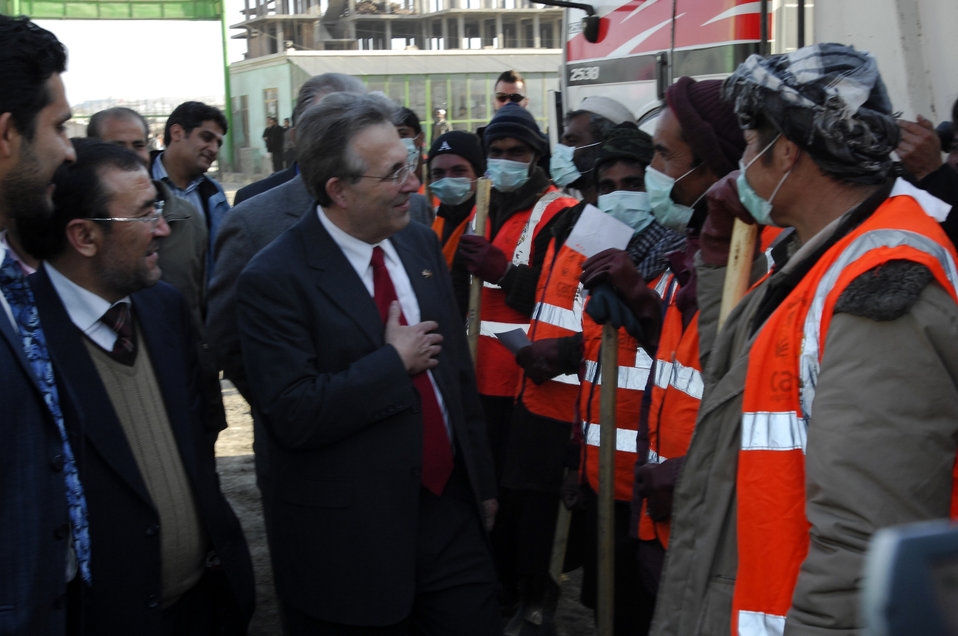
Care93